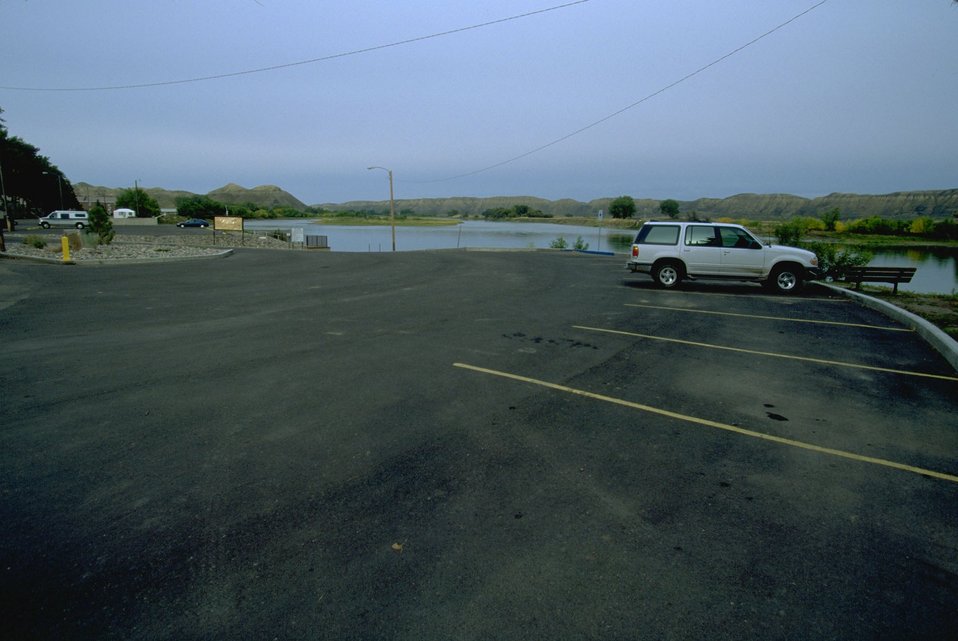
City boat launch/ramp at Fort Benton